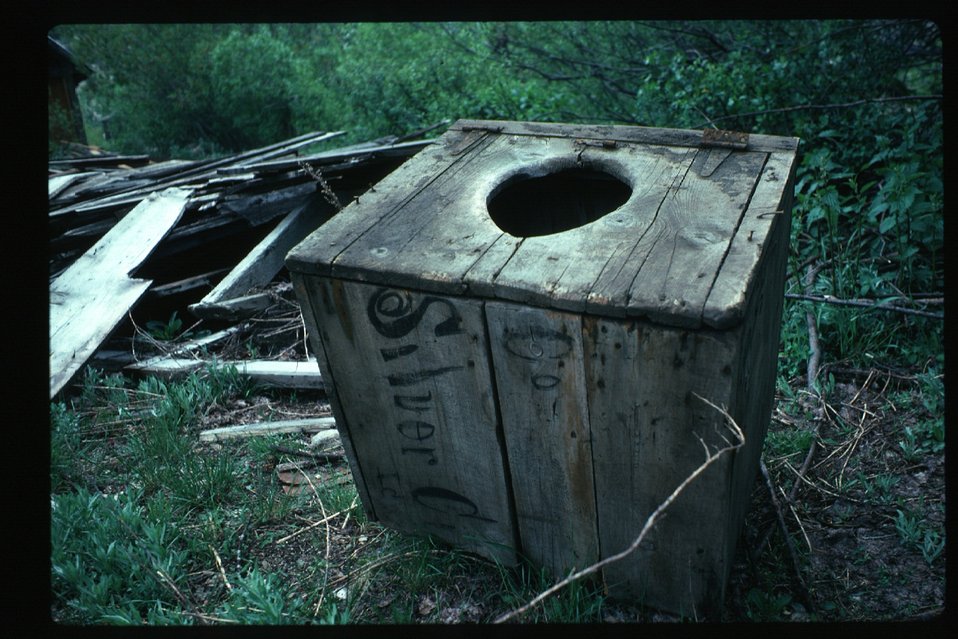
Architecture Silver City Cultural Resources Owyhee Field Office LSRD Lower Snake River District